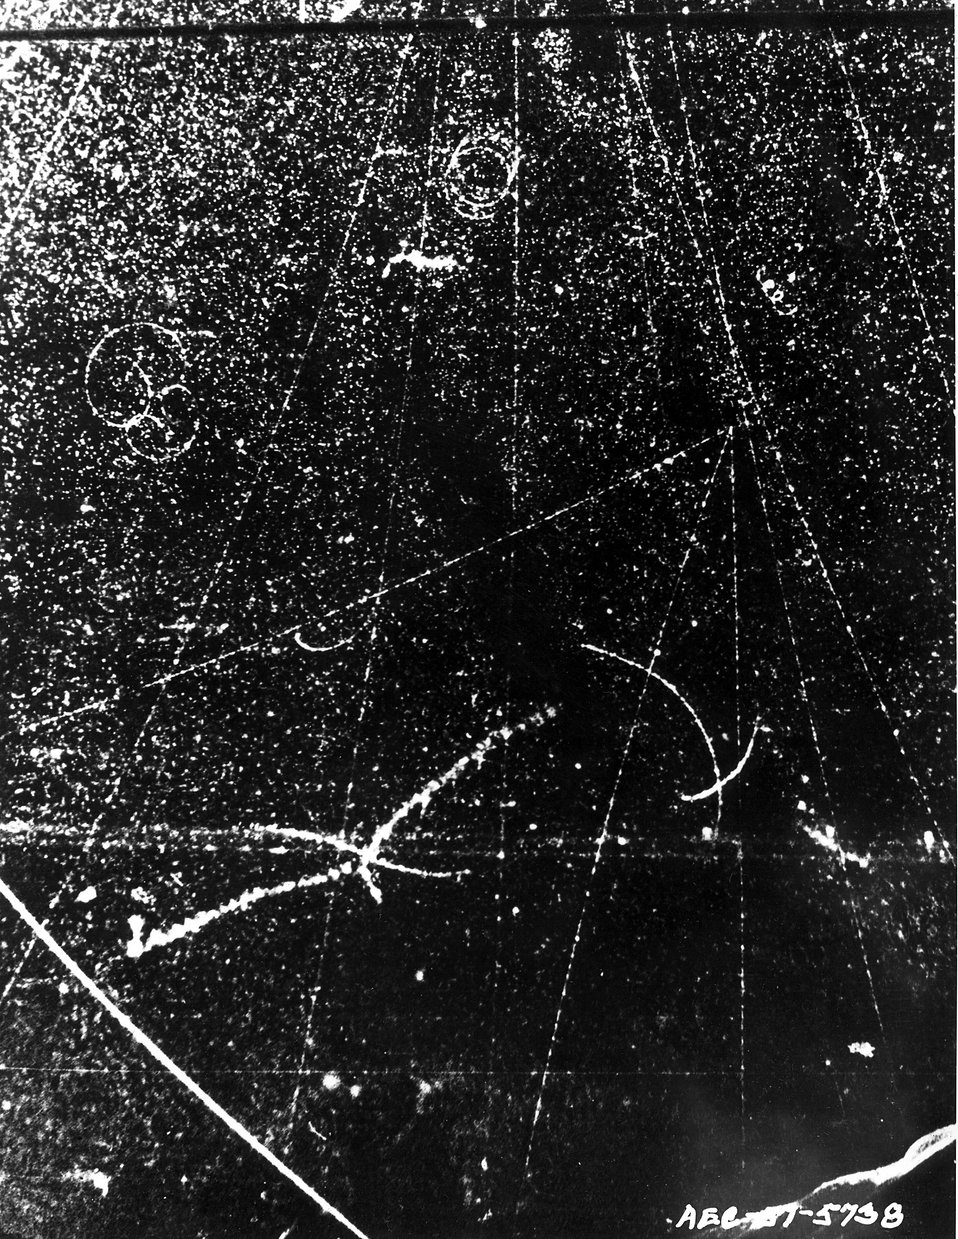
Neutron-proton collision produced by Brookhaven Cosmotron. c. 1957